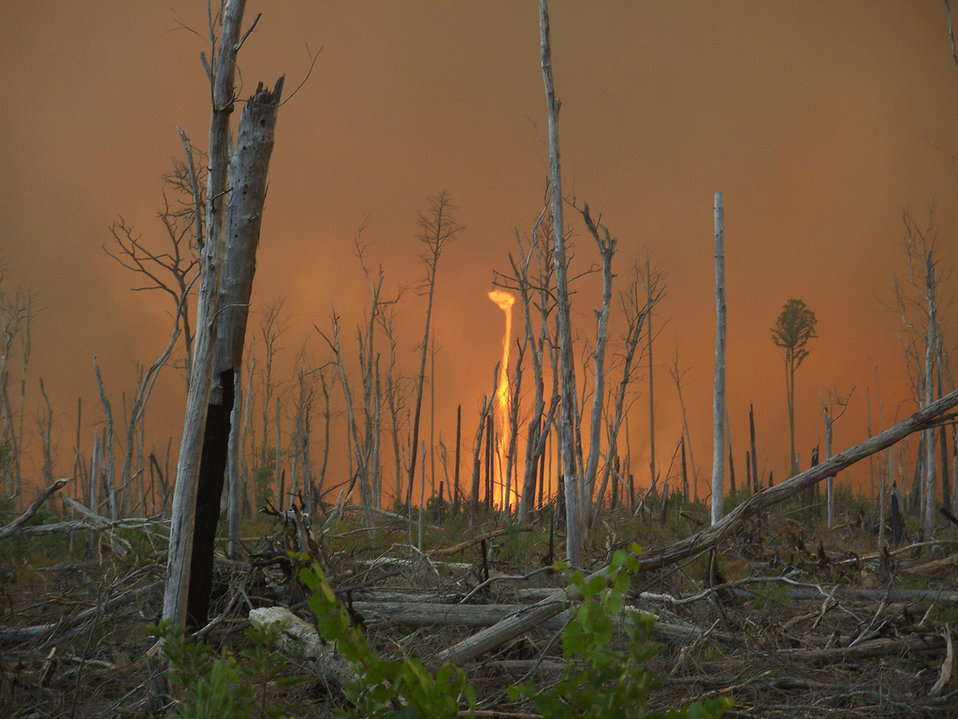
fire whirl

Great Dismal Swamp National Wildlife Refuge, VA/NC